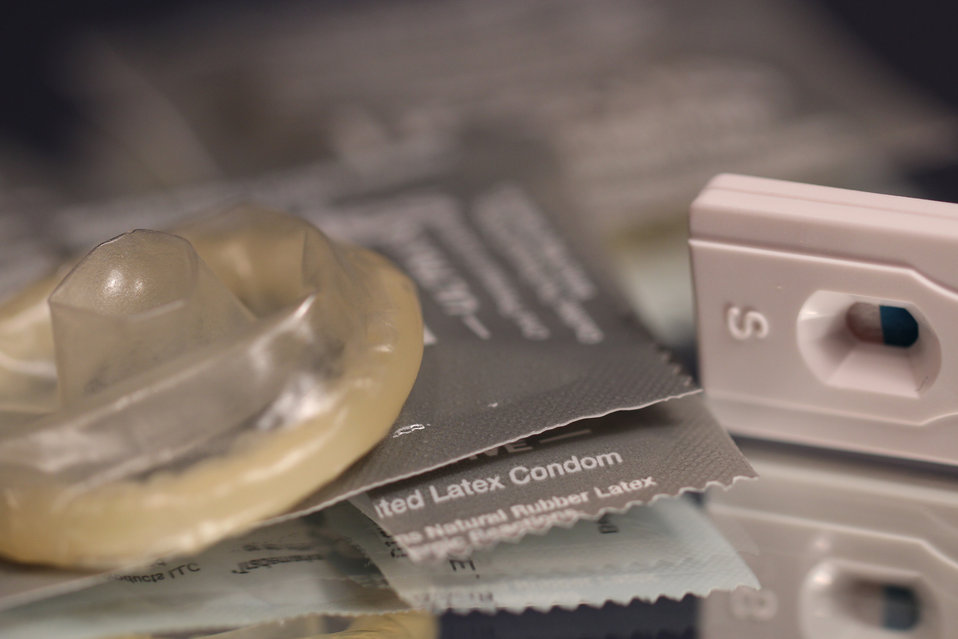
This photographic still life depicted a number of items which may be found in the repertoire of tools of the sexually-active individual including an opened latex condom, and a the sample-well end of a pregnancy test.